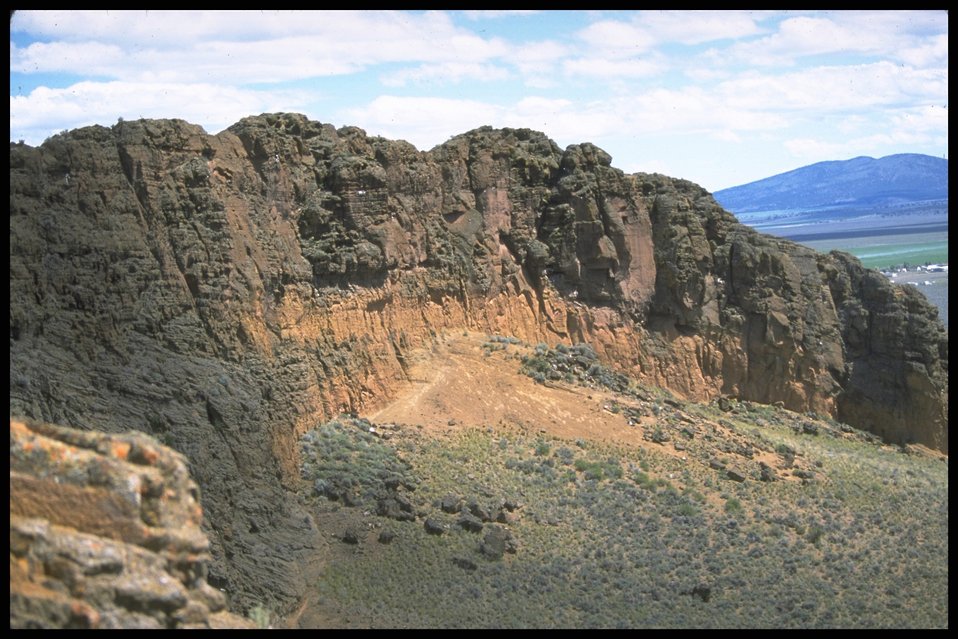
Scenic view of Ft. Rock from above. Lakeview District.